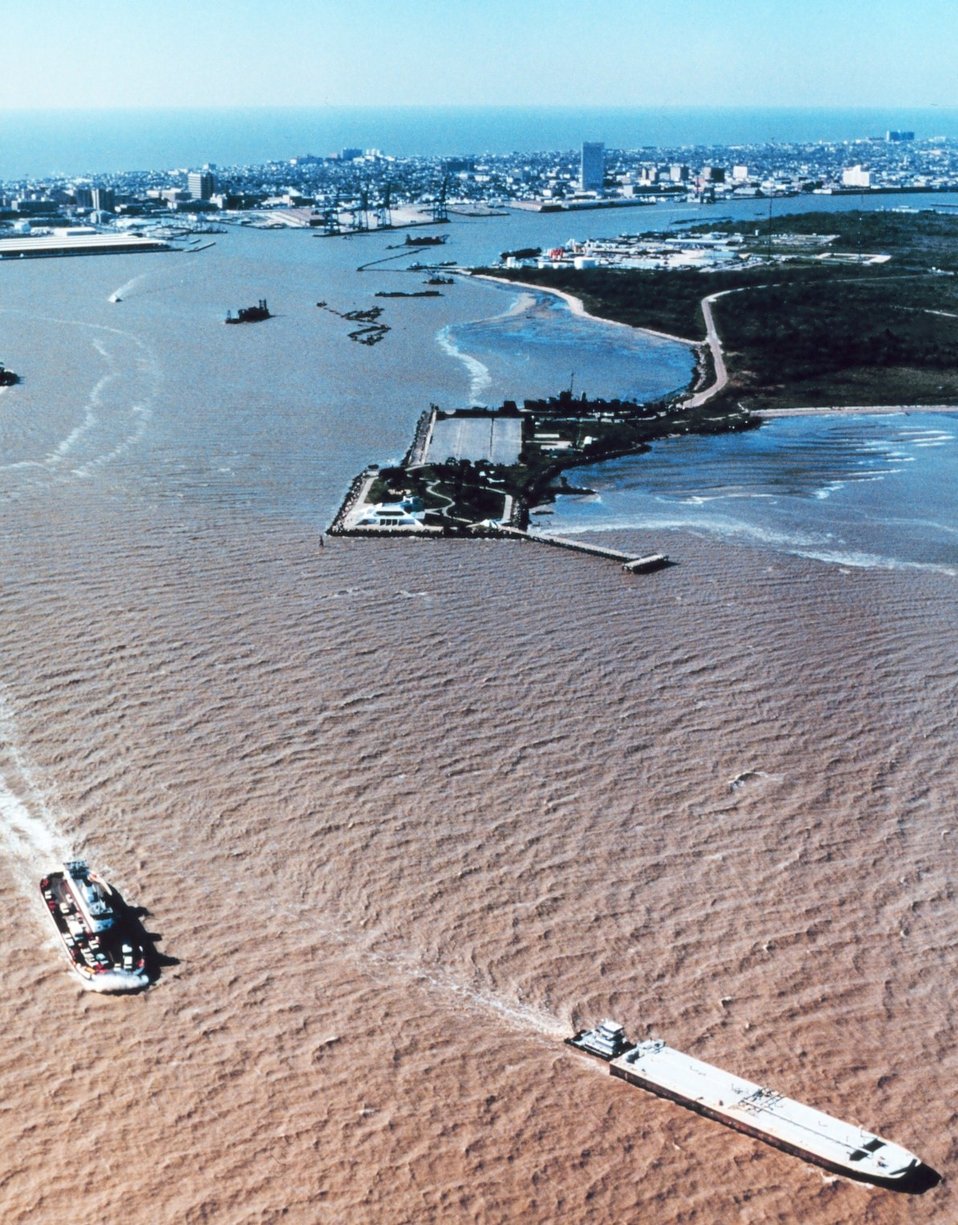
2918 North Latitude 9447 West Longitude.